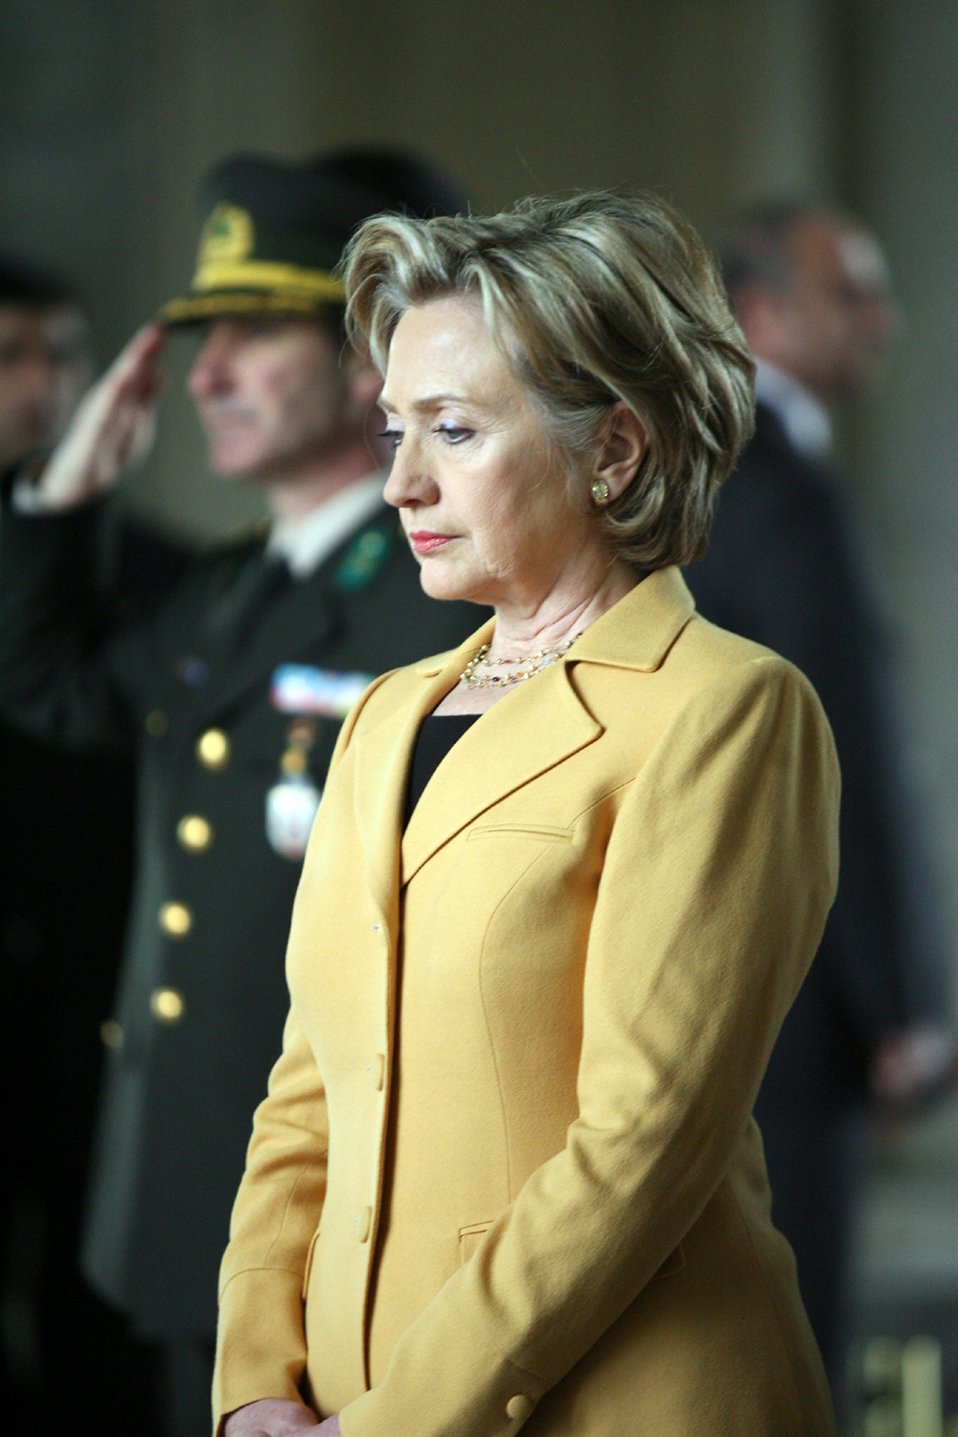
Secretary Clinton Visits Tomb of Turkish Republic’s Founder

U.S. Secretary of State Hillary Rodham Clinton observes a moment of silence at Anitkabir, Ankara, Turkey March 7, 2009.